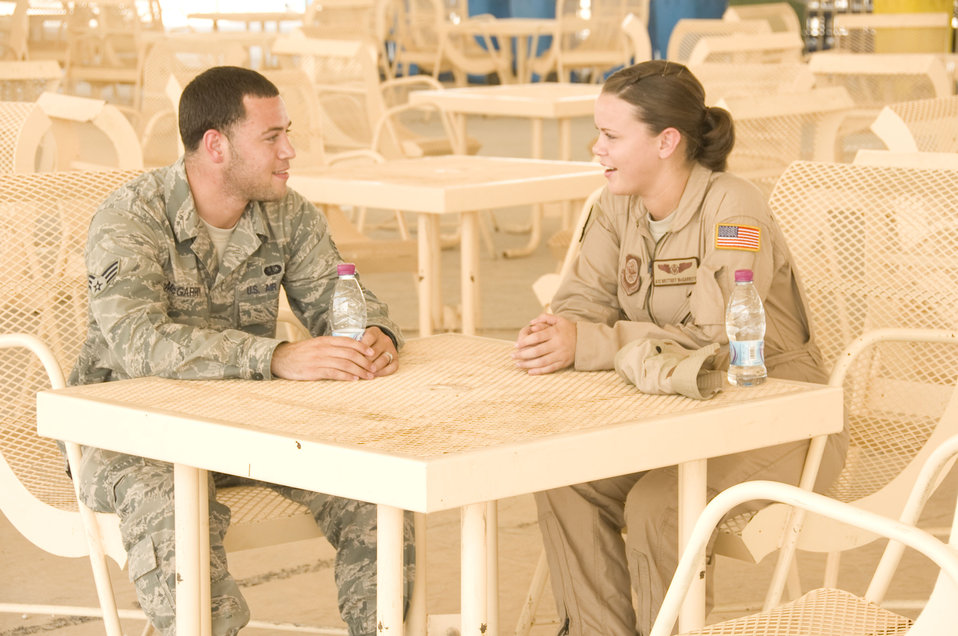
Irish Twins

Siblings Senior Airman Joseph McGarrity and Airman 1st Class Brittney McGarrity engage in conversation while deployed together in Southwest Asia Aug. 10, 2012. The McGarrity’s haven’t seen each other in almost a year and a half when Brittney left for basic military training last spring. Both native to Philadelphia, Pa., Joseph is assigned to the 379th Expeditionary Force Support Squadron while Brittney is assigned to 816th Expeditionary Airlift Squadron.